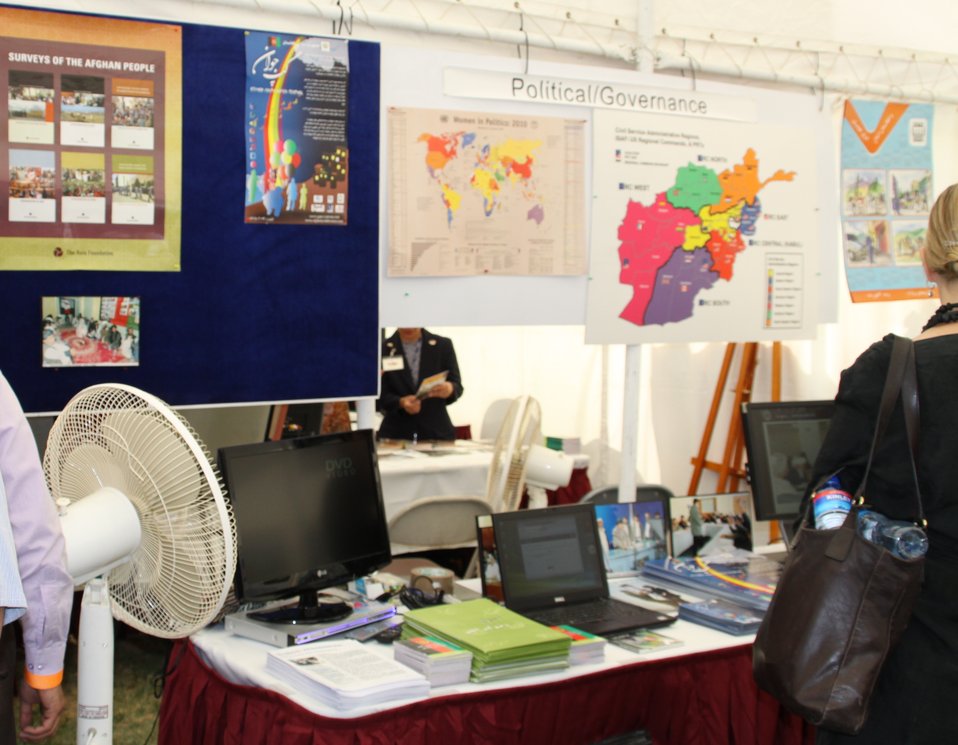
Kabul Official July 4th Celebration